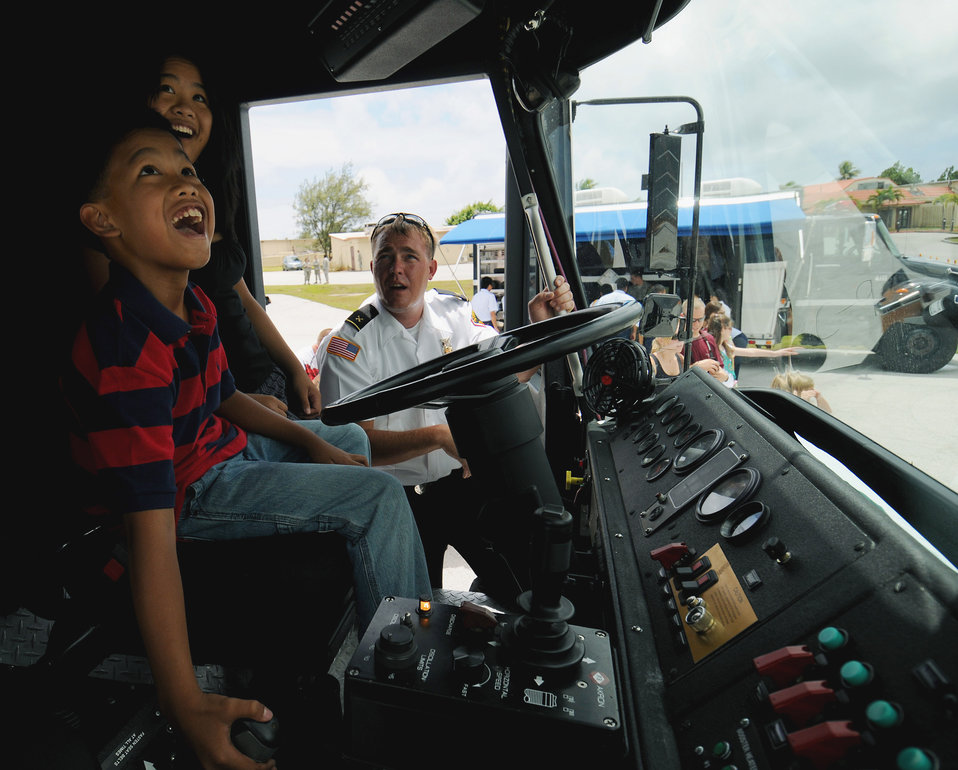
Andersen officials give up-close view of F-22, B-2

Will O'Meara shows children the functions of a fire engine during the March 28 open house at the Andersen Air Force Base, Guam. The event showcased the fire unit, explosive ordnance disposal unit, a K-9 unit, a KC-135 Stratotanker, an F-22 Raptor, and a B-2 Spirit. Mr. O'Meara is the Andersen AFB Fire and Emergency Services Flight station chief.